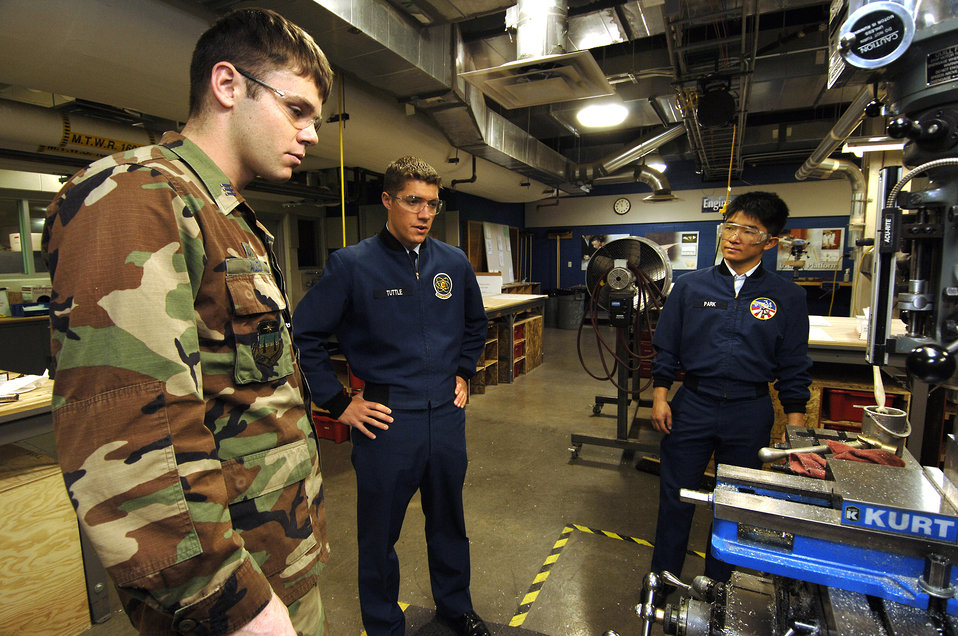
Satellite-savvy cadets accomplish out of world experiments

Senior cadet Christopher Allen explains procedures April 12 as he mills out one of the payloads for the upcoming vibration test of Falcon Satellite-5 to cadet seniors Colton Tuttle and Jae-Hyun Park. The satellite is being designed and built at the U.S. Air Force Academy in Colorado Springs, Colo. It will be tested and operated by the cadets through the USAFA Space Systems Research Center.